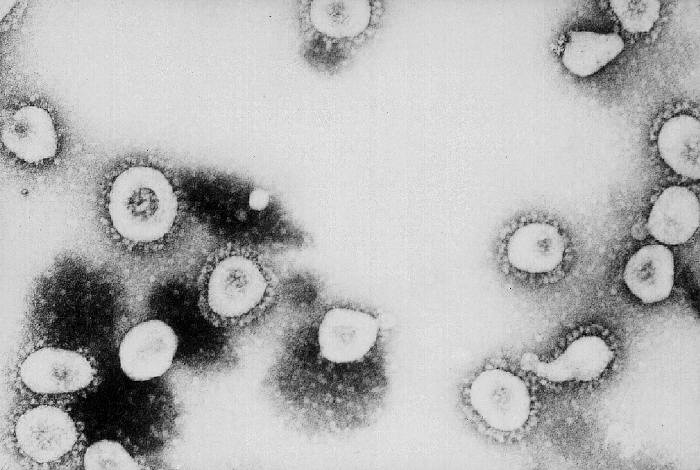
This transmission electron micrograph (TEM) revealed the presence of numbers of coronavirus OC43 virions.